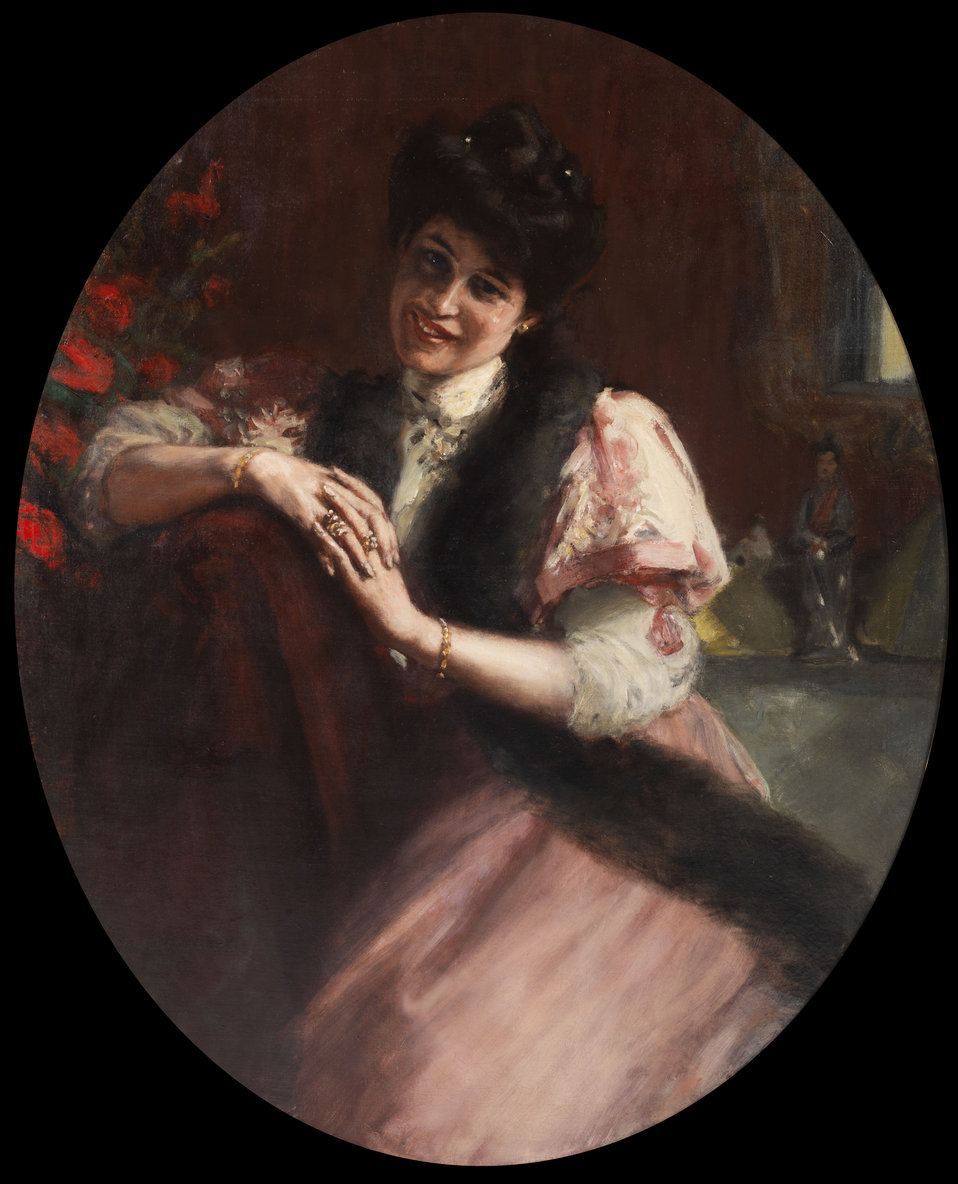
Albert von Keller Bildnis einer Dame mit Pelzstola